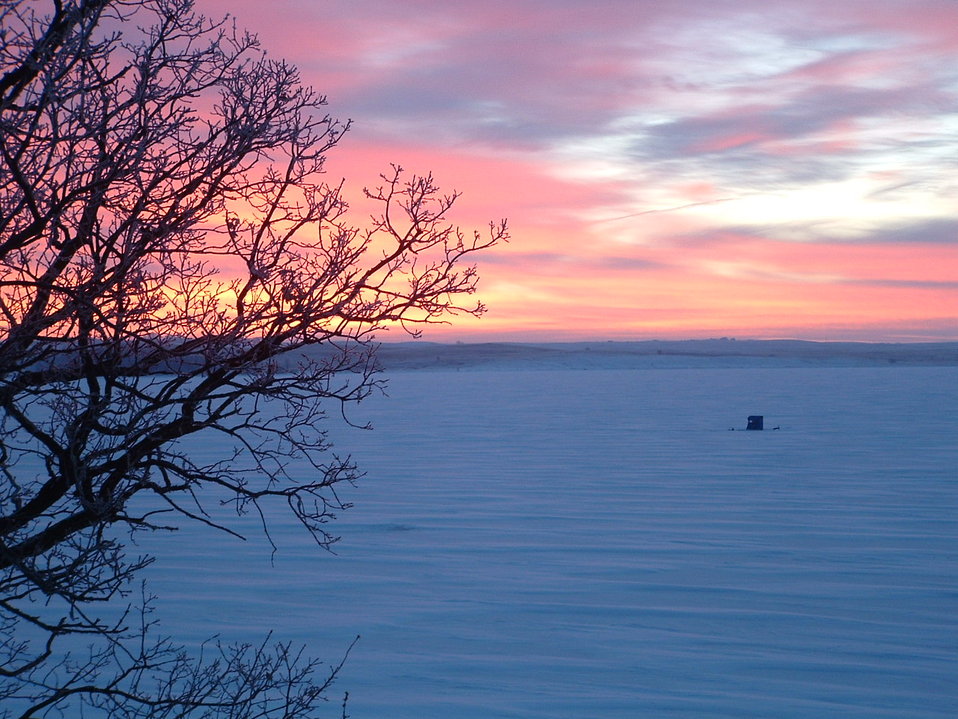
Catching the Early Fish

A lone ice fisherman enjoys the solitude of a winter sunrise at Waubay National Wildlife Refuge in South Dakota.

Credit: Laura Hubers / USFWS

Photo Contest Entry #161